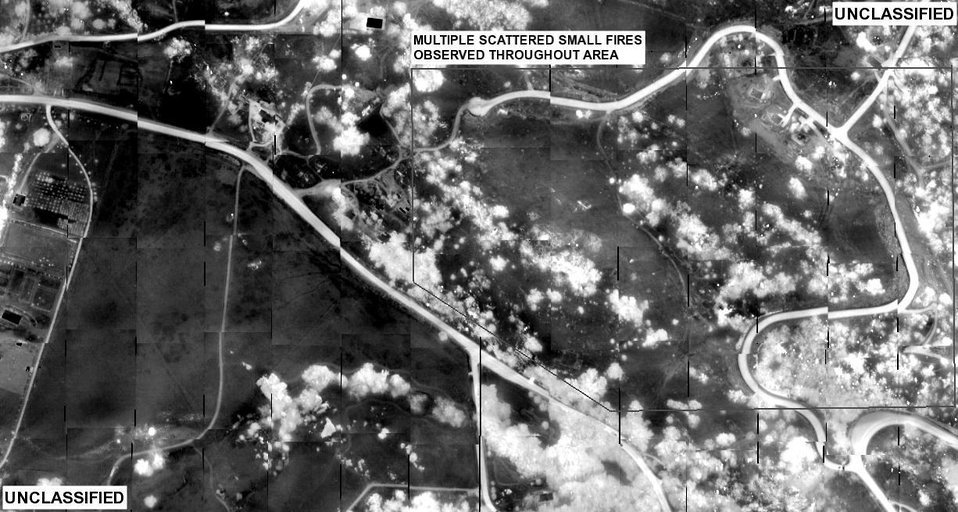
Global Hawk, U-2 capture essential wildfires images

An infrared image, taken by an RQ-4 Global Hawk Unmanned Aerial vehicle and analyzed for Southern California Firefighters, shows the Poomacha Fire scattered across rural terrain with hot areas and objects as white on a darker background.